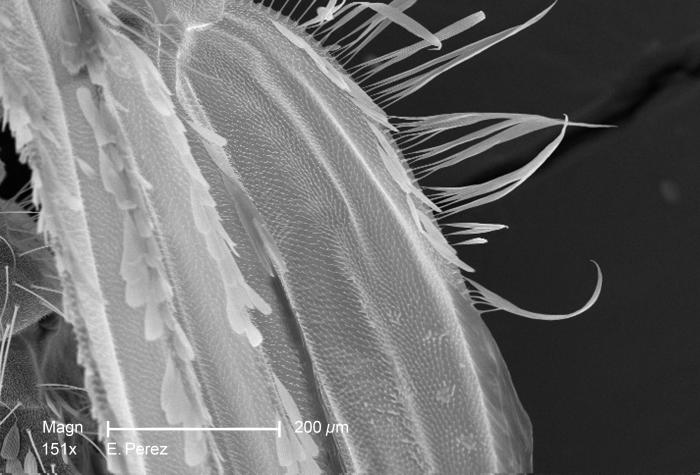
At a magnification of 151X, this scanning electron micrograph (SEM) revealed some of the ultrastructural exoskeletal details found on one of the wings of an unidentified mosquito retrieved from the suburbs of Decatur, Georgia. The exoskeleton, or outer surface of this arthropod, affords it with support and mobility, as well as organs specialized in sensorial acquisition. In this particular view, you'll note numerous small setae, or 'hairs' or various sizes, and diaphanous light-weight scales, which assist in both the act of flight, and thermoregulation of the insect's bodily temperature. Note that PHIL 10516, 10517 and 10518 depict these morphologic features in even greater detail.